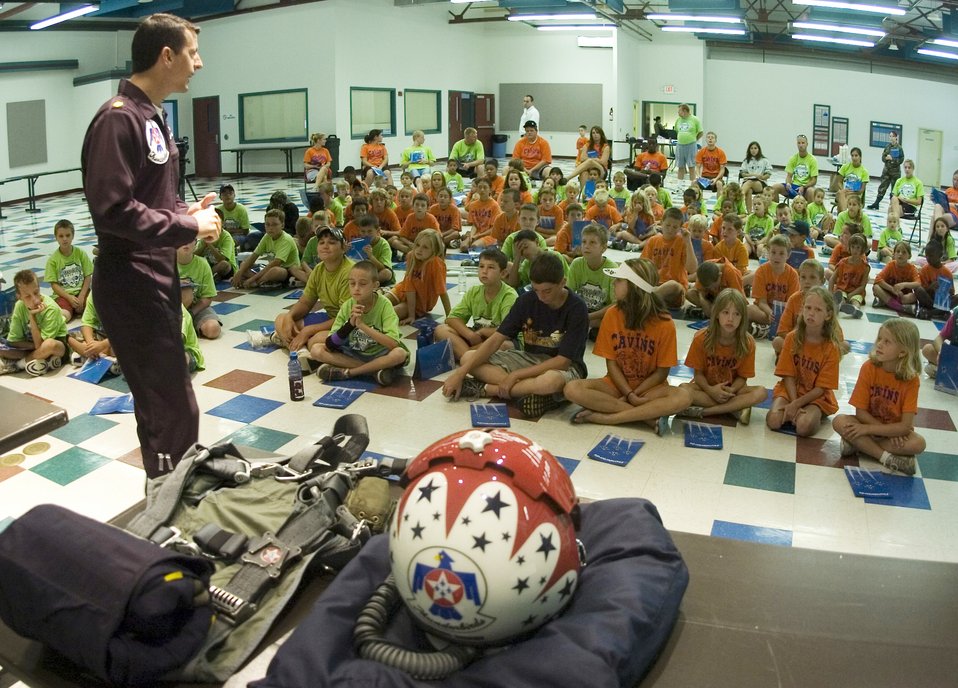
Thunderbirds visit youth camp

Children attending the Caty Cavins Community Center Summer Camp in O'Fallon, Ill., on Aug. 11 listen as Maj. Brian Farrar of the Thunderbirds, the U.S. Air Force Air Demonstration Squadron, tells what it is like to be a fighter pilot and fly as a Thunderbird. Major Farrar is Thunderbird No. 5 and lead solo for this year's team. The camp visit was part of Air Force Week community activities in the St. Louis area.